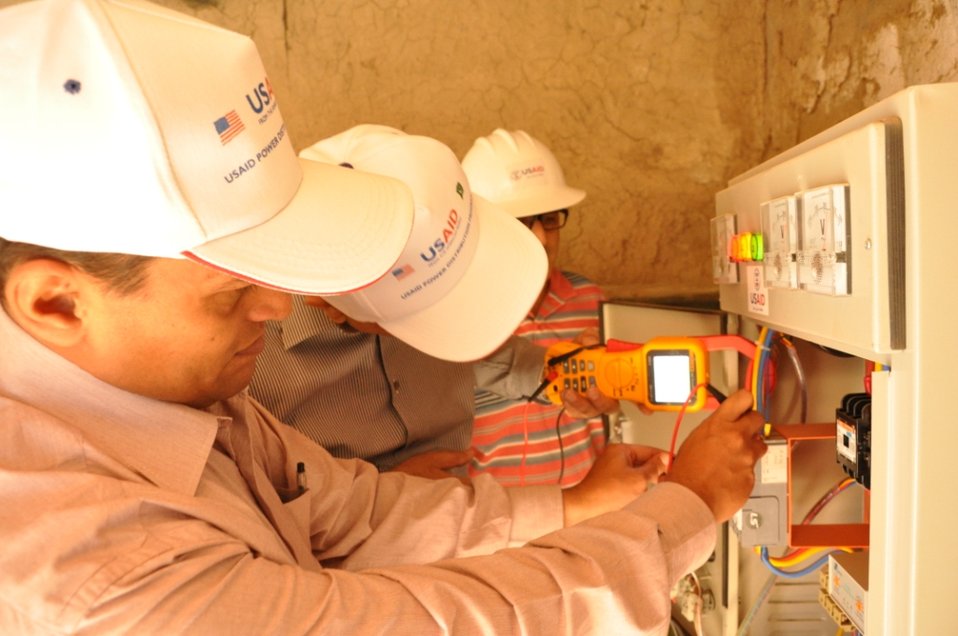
Usaid To Provide Technical Assistance To Improve Efficiency Of Tube-Wells In Iesco By Installing 2600 Lt Capacitors at Islamabad on April 26, 2012